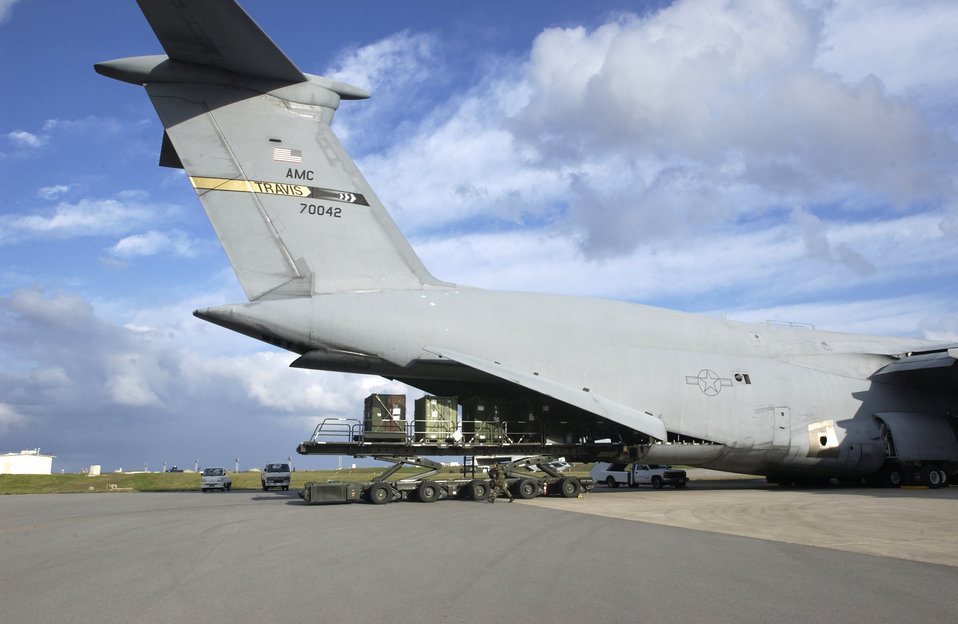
Humanitarian aid

KADENA AIR BASE, Japan -- Airmen here load equipment and supplies bound for Southeast Asia as part of disaster relief following a 9.0 magnitude earthquake that struck Dec. 26 off the coast of Indonesia causing tsunami waves that have affected 12 countries. More than 36,000 meals and four aircraft pallets of fresh water were processed through the base's cargo area. The 18th Wing is providing relief supplies and personnel to help with the humanitarian effort.